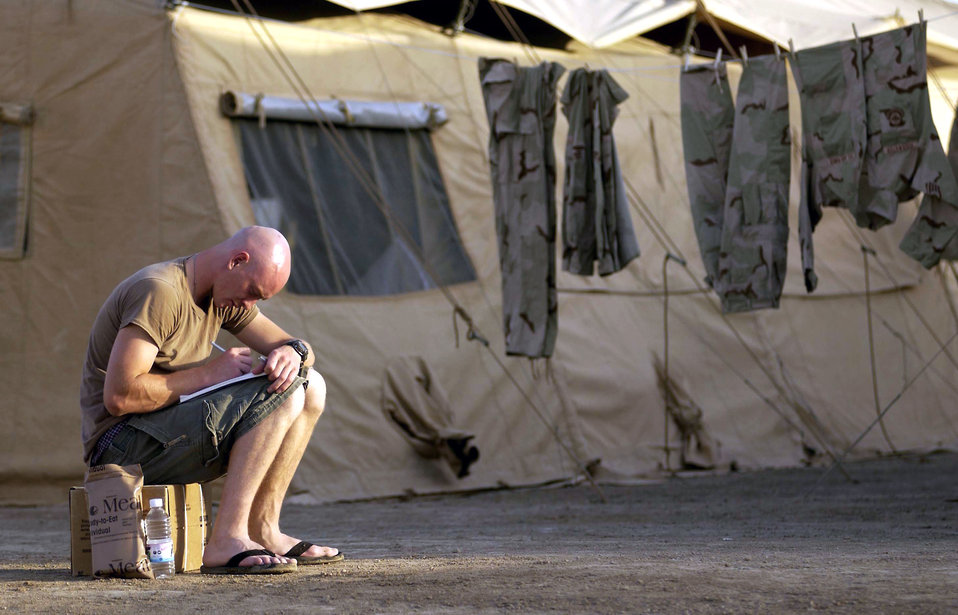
Sealed with a kiss

OPERATION IRAQI FREEDOM -- Airman Martin Rygula, an air transportation craftsman, takes time to write a letter while deployed to Tallil Air Base, Iraq, supporting Operation Iraqi Freedom.